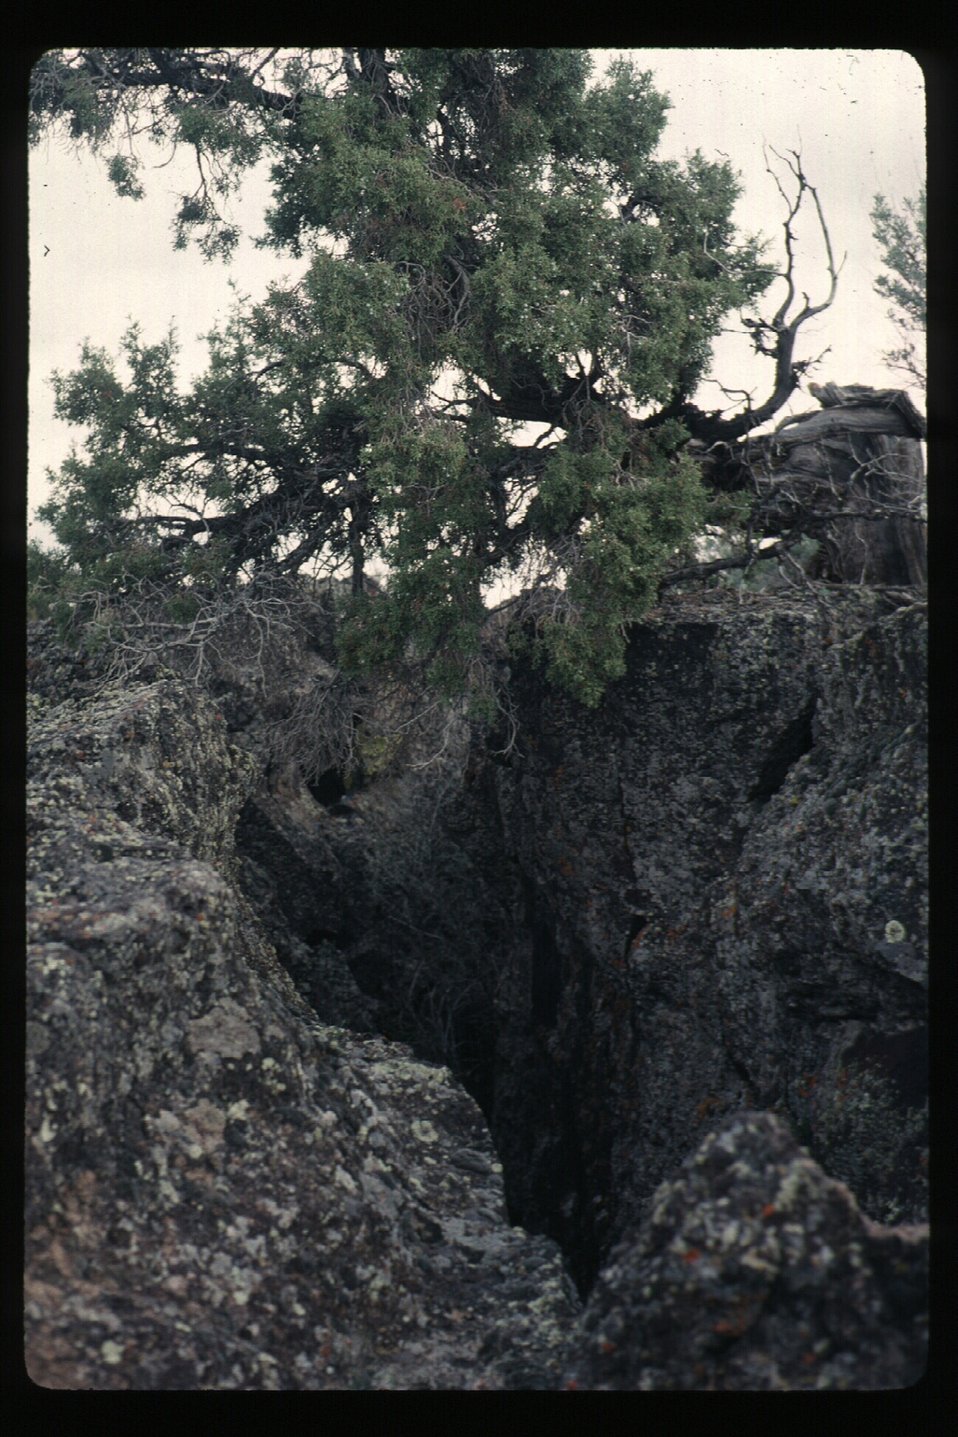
Hells Half Acre Lichen on rocks Wilderness Idaho Falls Field Office USRD Upper Snake River District